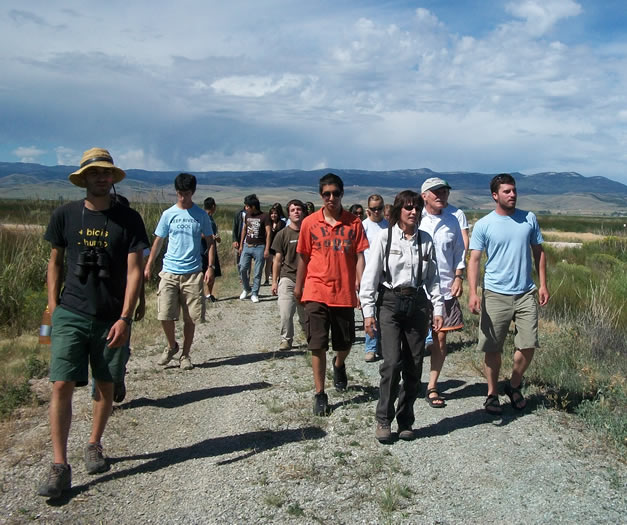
Touring Bear Lake National Wildlife Refuge in Idaho

Youth Conservation Corps crew and Utah Conservation Corps crew tour the Bear Lake National Wildlife Refuge on a field trip to wrap up the end of the successful eight week program.